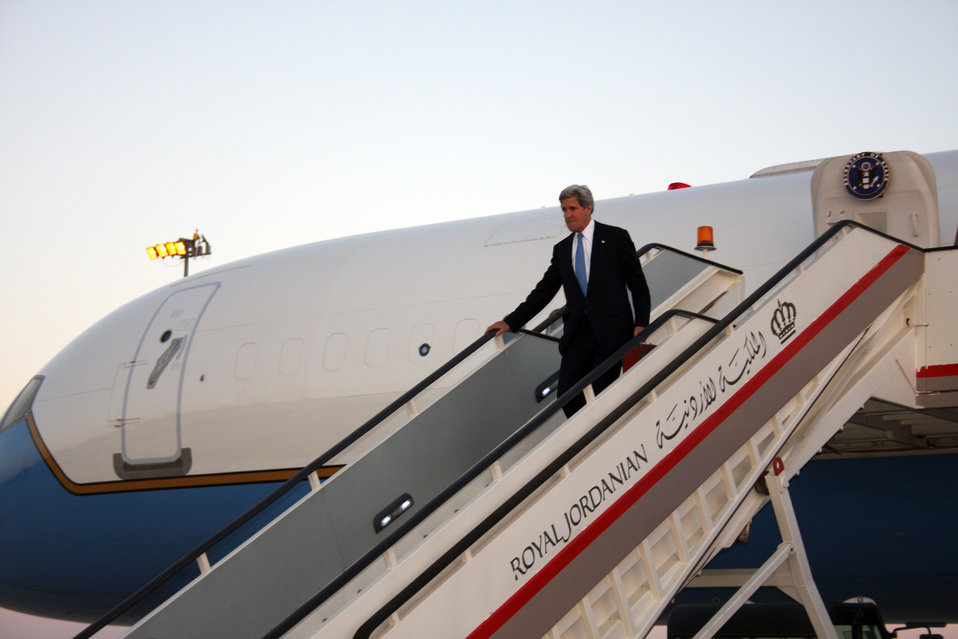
Secretary Kerry Arrives in Amman, Jordan

U.S. Secretary of State John Kerry arrives in Amman, Jordan, on June 26, 2013.